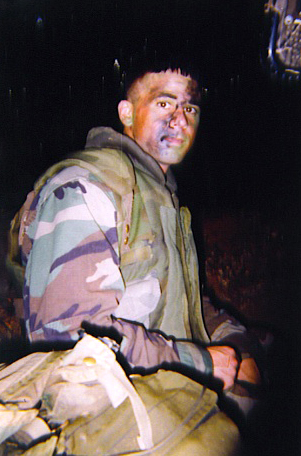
Andrew “Maury” Eastwick IV, the Refuge Biological Technician at Pelican Island National Wildlife Refuge, joined the officer ranks of the Marine Corps right after college in 1998. He felt obtaining experience as a Marine Officer would help prepare him for a future career within the wildlife management arena by learning valuable skills in leadership and management, which he did with the 22nd Marine Expeditionary Unit including work during a Mediterranean deployment as well as training in Tunisia and Bosnia. In 2002 he left the military and held a series of jobs. This past summer he joined the Fish and Wildlife Service. “I am completely thrilled and honored to have this opportunity to serve our nation’s fish and wildlife by helping in their conservation,” says Eastwick. “I sincerely hope that this is the beginning of a long career with the U.S. Fish and Wildlife Service.”